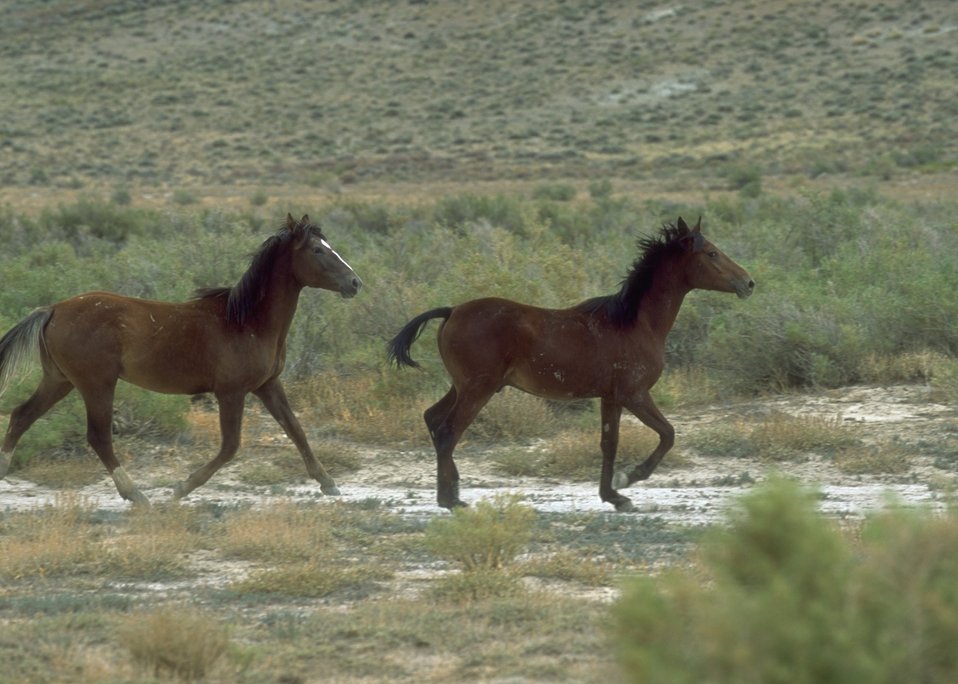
Wild horses, Rock Springs Field Office.